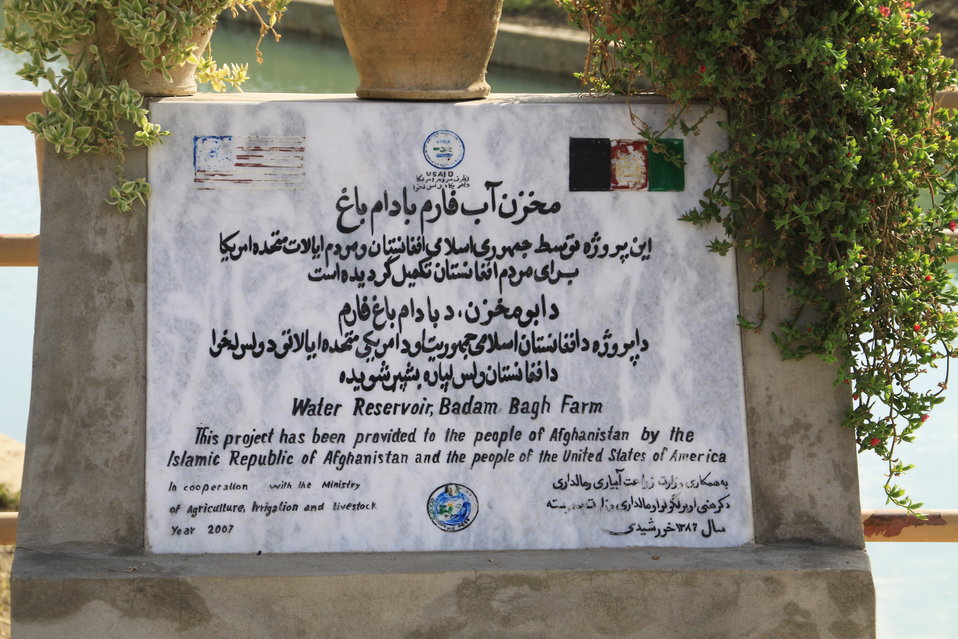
Badam Bagh Farm